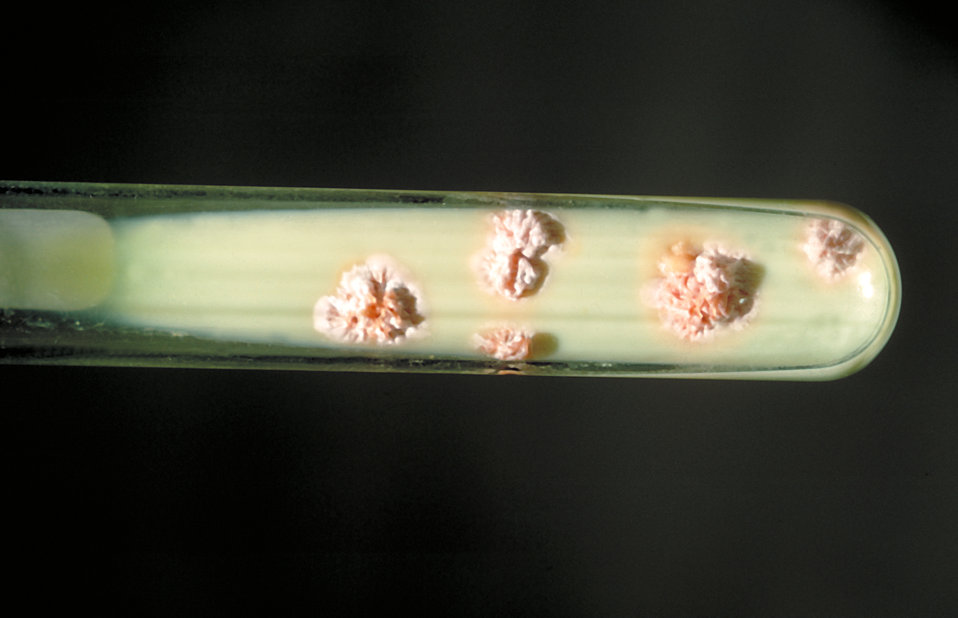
Pictured is a Lowenstein-Jensen Slant culture of Nocardia asteroids at 37�C.